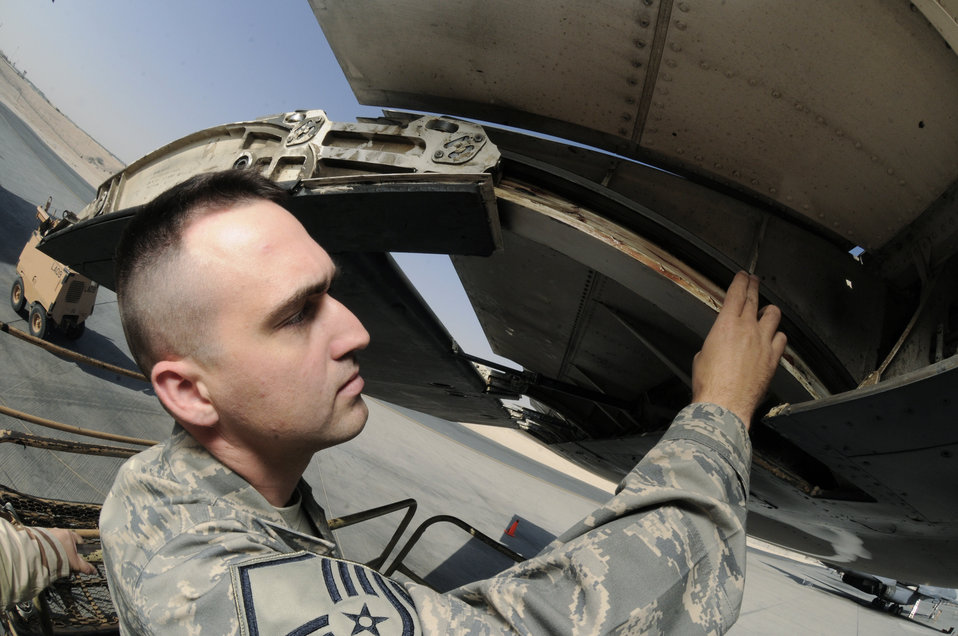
Airmen increase mission effectiveness 1 stat at a time

Master Sgt. Charles Havenner checks a flat spot on the flap carriage track Oct. 7 at an air base in Southwest Asia. Sergeant Havenner is assigned to the 379th Expeditionary Maintenance Operations Squadron.